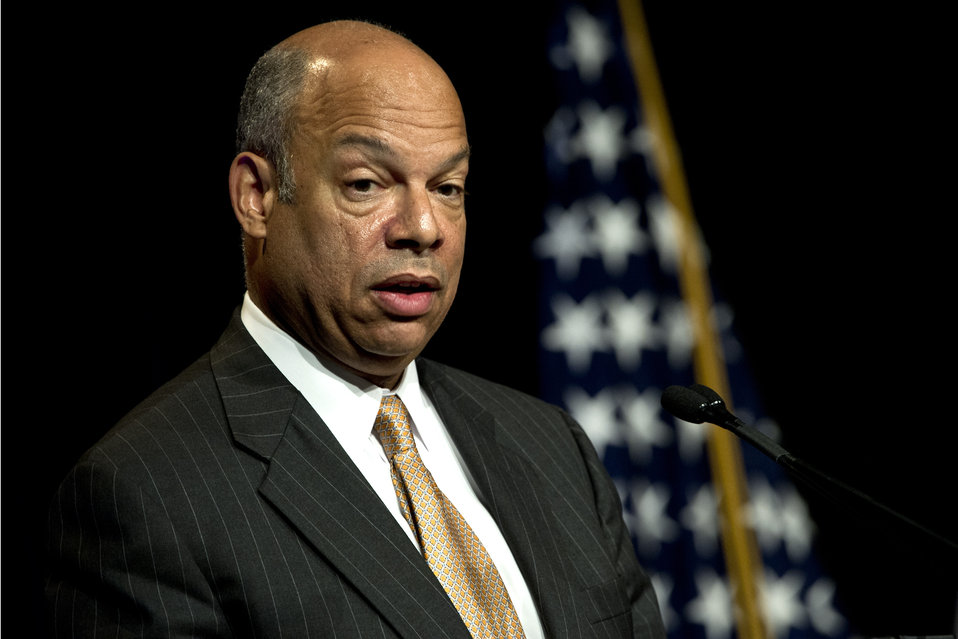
LGBT pride month

Defense Department General Counsel Jeh C. Johnson delivers the keynote address during the department's Lesbian, Gay, Bisexual and Transgender Pride Month event at the Pentagon, June 26, 2012.